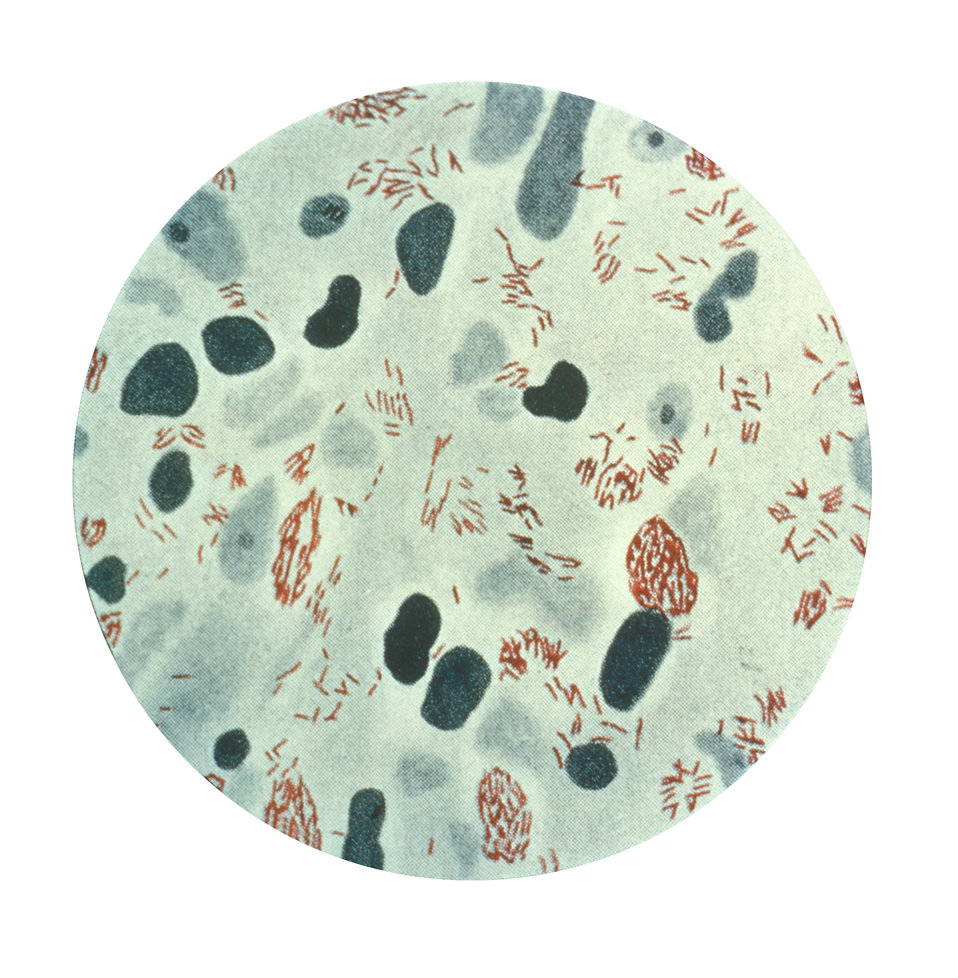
A photomicrograph of Mycobacterium leprae taken from a leprosy skin lesion.